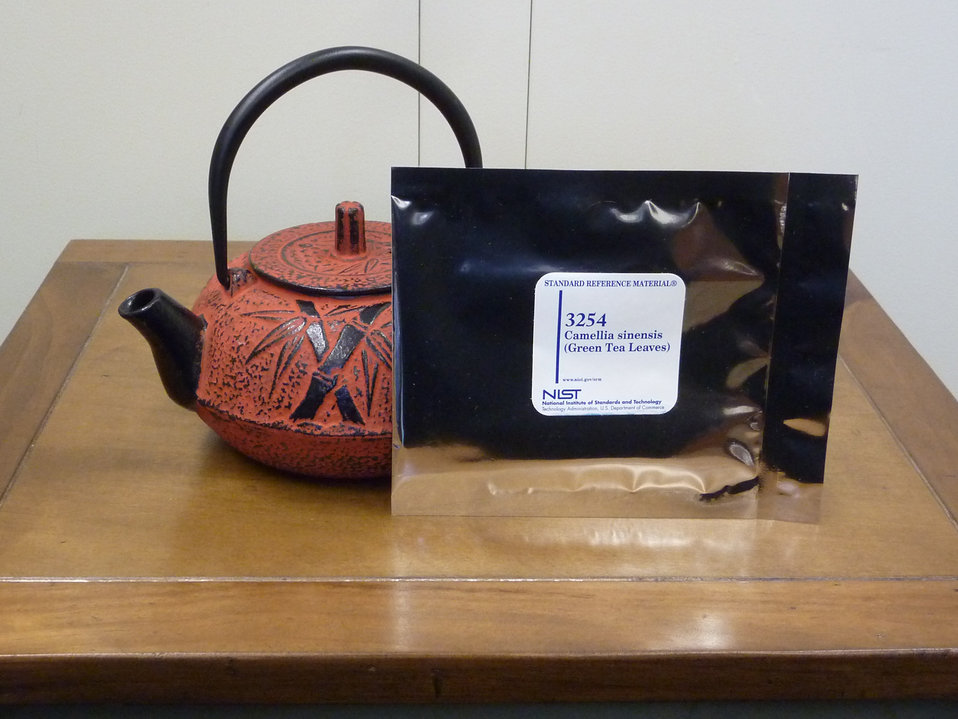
Green tea Standard Reference Material (SRM)

Green tea has been long prized not only for its taste but also for purported health benefits and medicinal value. Use of these green tea reference materials will improve the measurement precision and accuracy of measurements of constituents in green tea products available as dietary supplements.